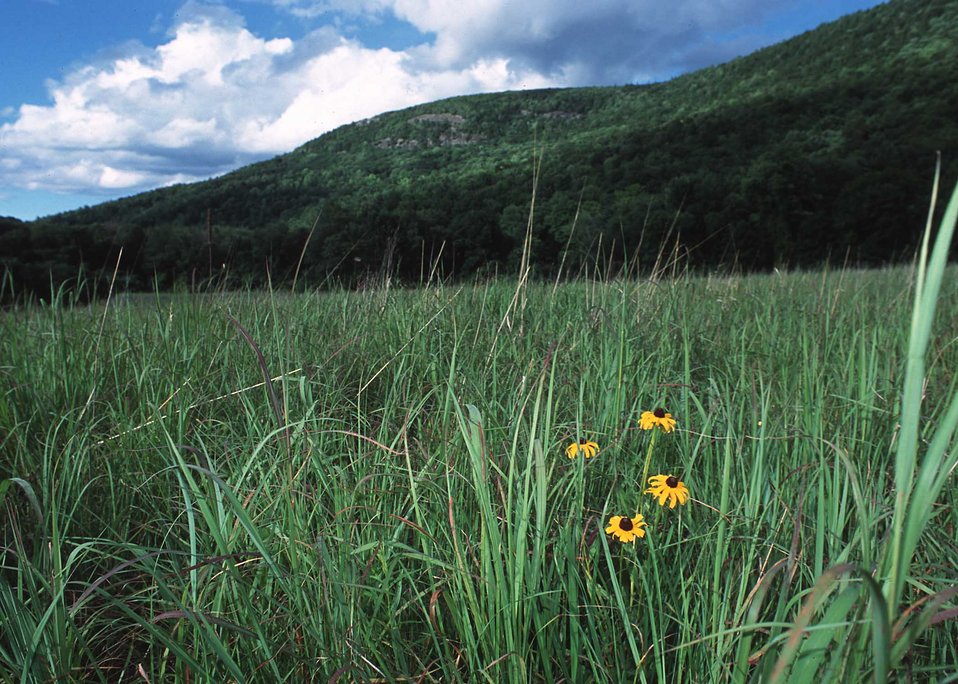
Warm season grassland habitat restoration in Litchfield County.